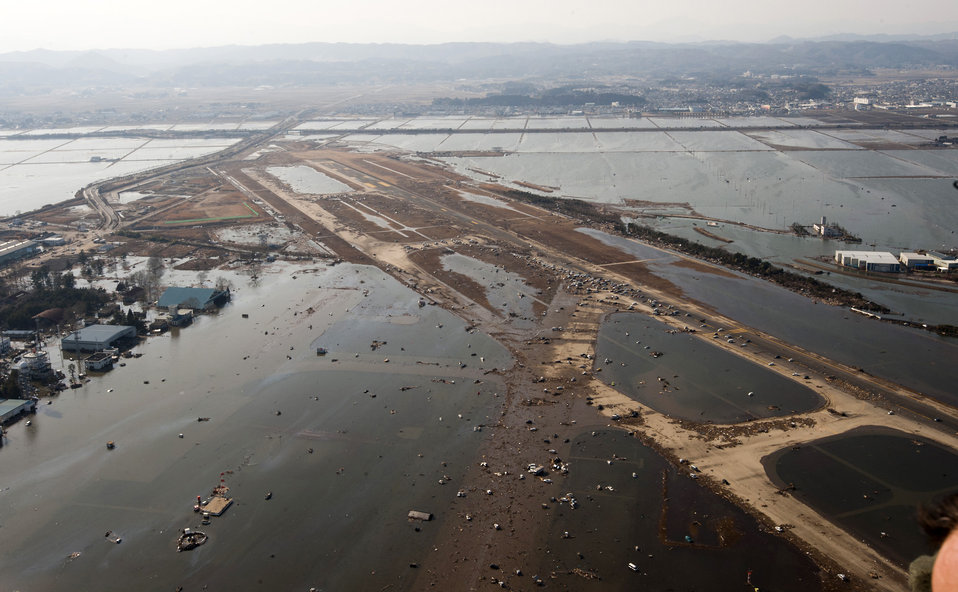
Japan's aftermath

Debris and water covers most of the Sendai Airport, Japan, March 13, 2011, after the 8.9-magnitude earthquake and subsequent tsunami that struck the region.